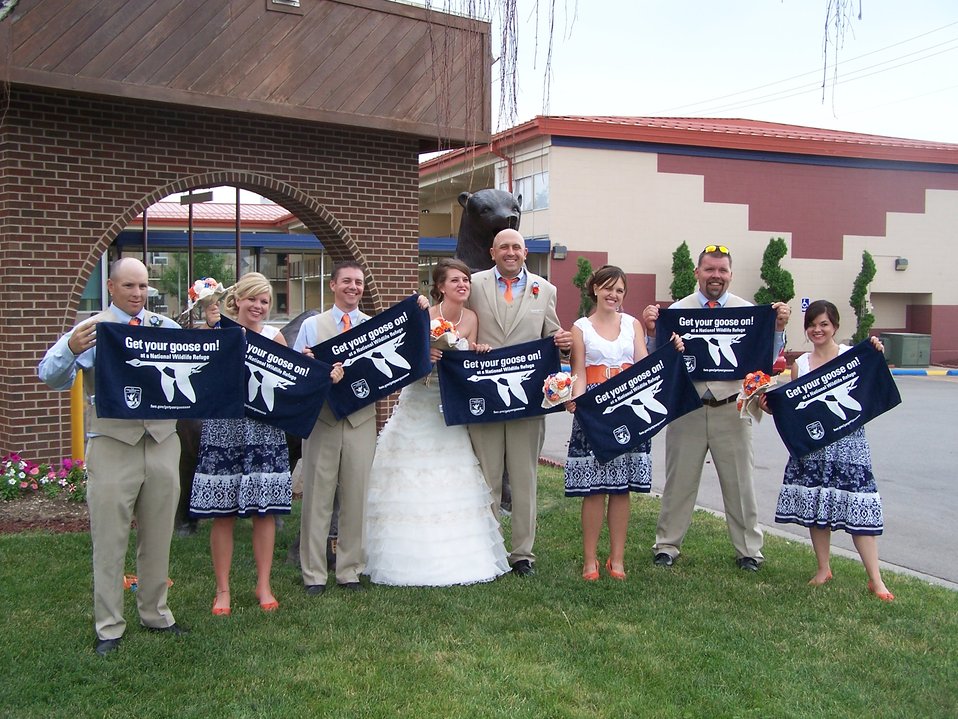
Get Your Goose On! - Holy Matrimony Style

Bowdoin National Wildlife Refuge's Fire Management Specialist Jim and his bride, Katie Forsythe, Get Their Goose On at their wedding.